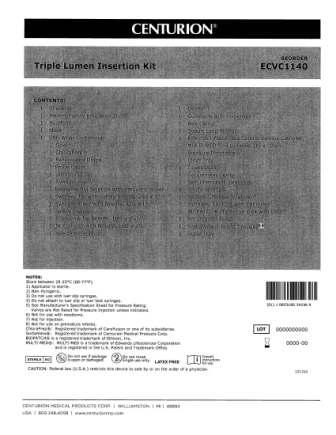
RECALLED - Convenience kits which contain bacteriostatic sodium chloride solution by American Regent

April 1, 2011 - Product Recall - Centurion Medical Products Initiates Voluntary Recall of Customized Convenience Kits (including select Central Venous Catheter, PICC Insertion, and VAD Trays) that contain American Regent’s Bacteriostatic Sodium Chloride Injection, USP, 0.9% 30 mL Multiple Dose Vials.